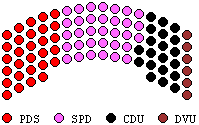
created with: http://home.arcor.de/wzwz.de/wiki/einzel/elections.zip ( javascript / Mozilla ONLY )